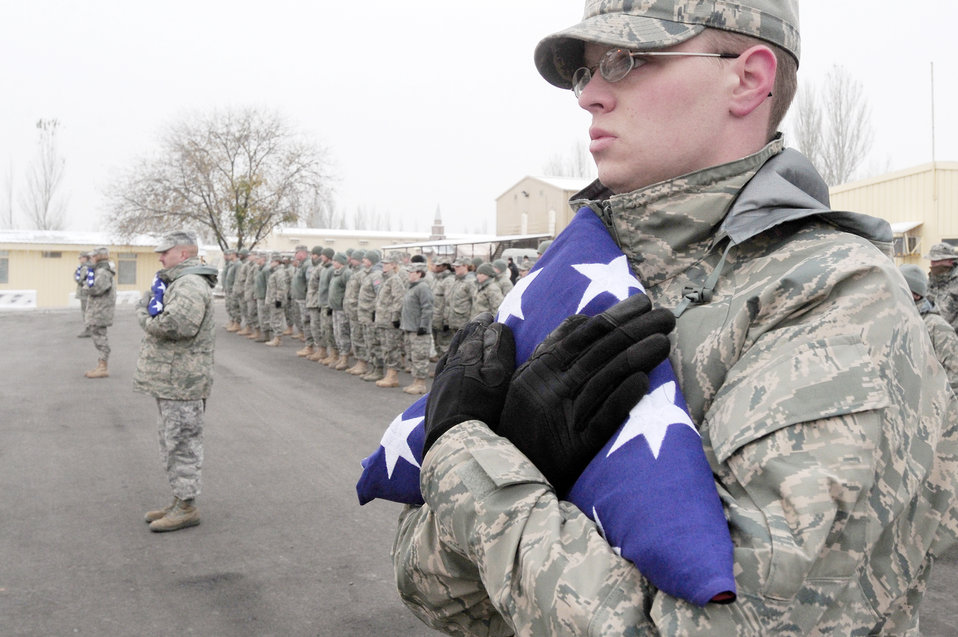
The ultimate sacrifice

At the Transit Center at Manas, Kyrgyzstan, Senior Airman Zachary Merryman holds the American flag tightly at a ceremony honoring those who've made the ultimate sacrifice since the terrorist attacks of 9/11. Airman Merryman is a radiology technician with the 376th Expeditionary Medical Group.